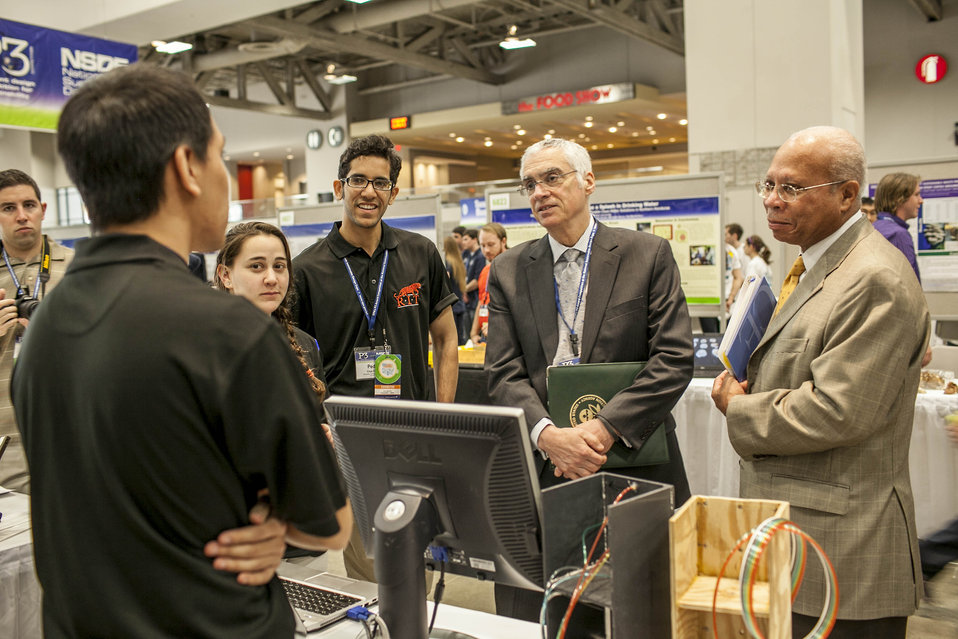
2014 P3 Competition

Rochester Institute of Technology’s Waste team explain how their Arborloo, a lightweight toilet system, works for rural areas in the developing world to EPA Deputy Administrator Bob Perciasepe and Jim Johnson, director of EPA’s National Center for Environmental Research.
RIT Arborloo EPA P3 website.